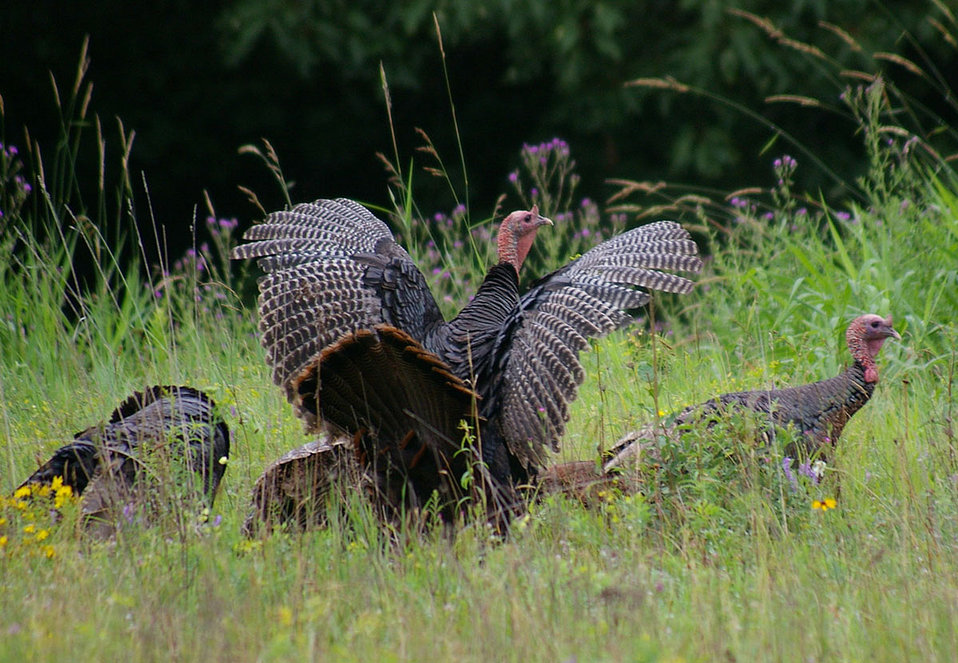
This flock of male turkeys (toms) roamed near a New Hampshire airport. Research tracking the movements and habits of these birds helped Wildlife Services biologists explore solutions to reduce turkey traffic and boost aviation safety.